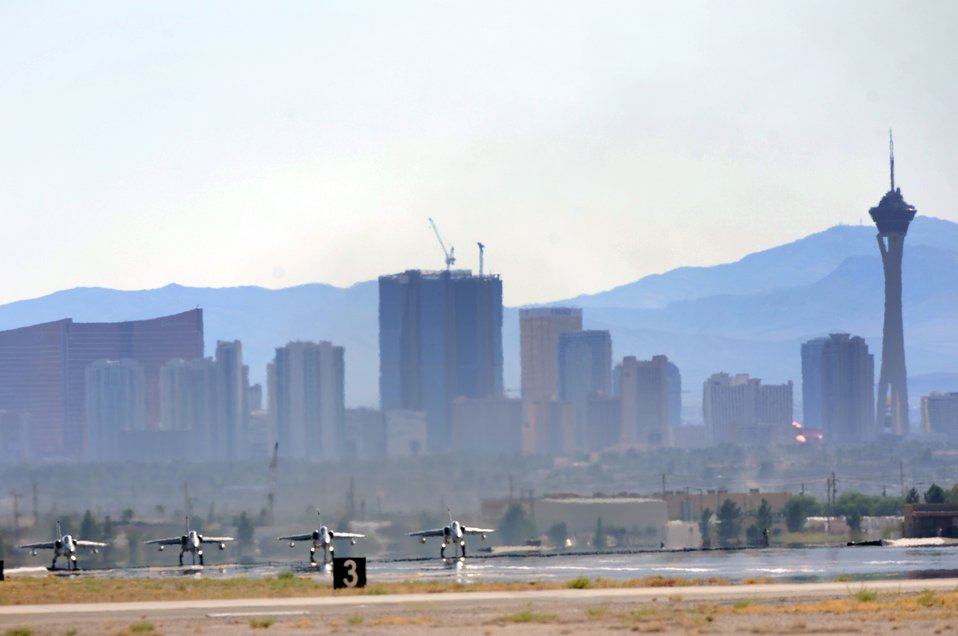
Red Flag trains combat air forces

Italian Air Force AMX fighters prepare for take off during a Red Flag training mission Aug. 26, 2009 at Nellis Air Force Base, Nev. Red Flag is a realistic air combat training exercise conducted over the 15,000-square-mile Nevada Test and Training Range north of Las Vegas. U.S. Air Force, Navy and Marines Corps units are participating in Red Flag 09-5 along with allied forces from Italy and the United Arab Emirates.